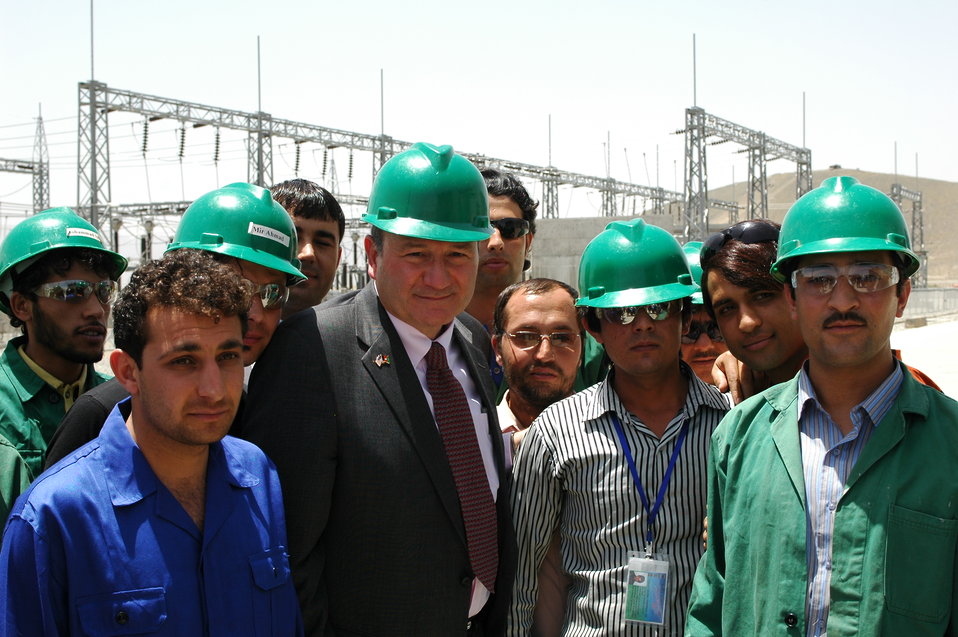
Tarakhil Power Plant Handed over to Afghan Government